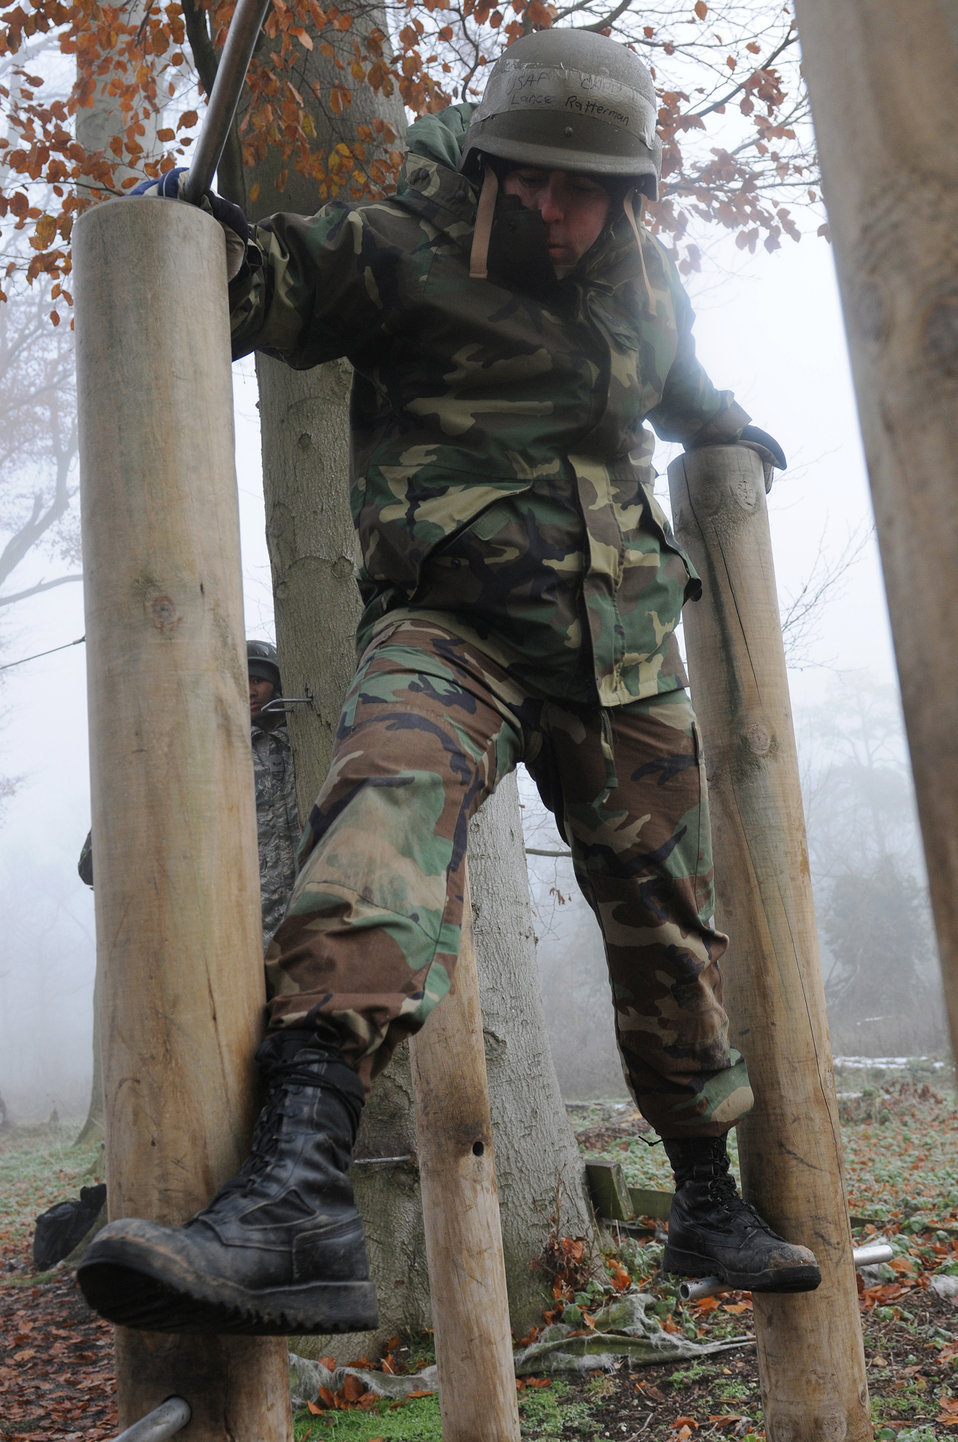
Cross-country training pools experience, skills

Tech. Sgt. Travis Romesha crosses an obstacle at the low-ropes course during Leader, Ethos and Air Power Training Day Dec. 6, 2010, at Royal Air Force Marham, England. Activities of the day included paintball, target practice, a low-ropes challenge and a mind-over-matter exercise. Sergeant Romesha is a member of the 100th Air Refueling Wing Inspections and Readiness Office.